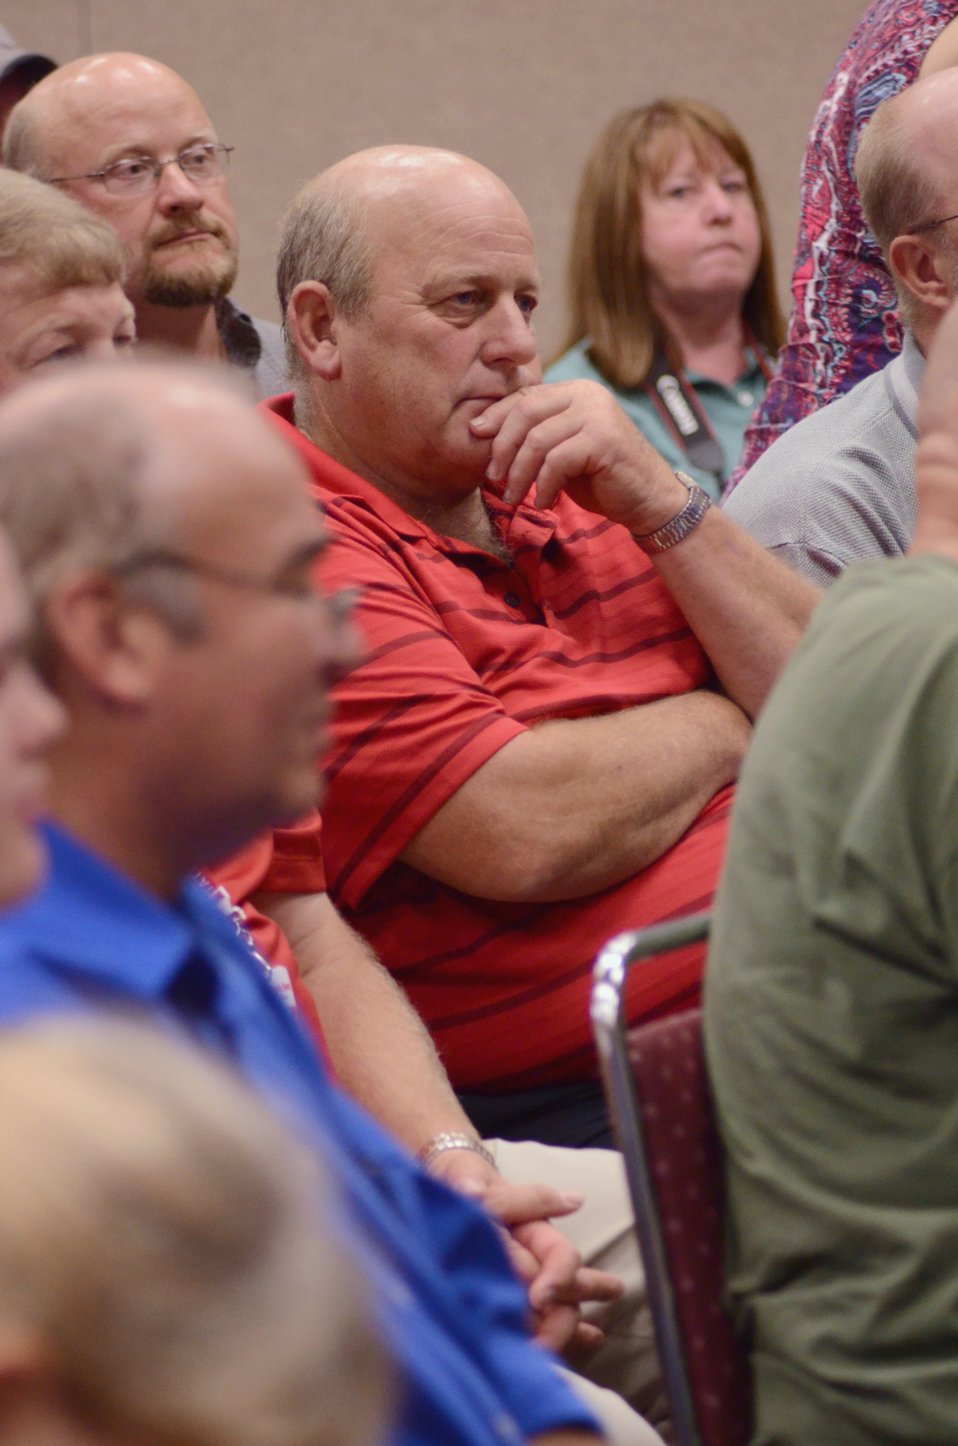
Members of the audience listen to Agriculture Secretary Tom Vilsack speaks at the White House Rural Forum at the Wisconsin State Fair, in West Allis, WI, on Thursday, August 4, 2011, to businesses and community leaders, farmers and ranchers to explore ways federal, state and local officials can work together to improve economic conditions and create jobs. The forum is part of a series of White House Rural Roundtables that are being held across the country this summer with senior Administration officials.